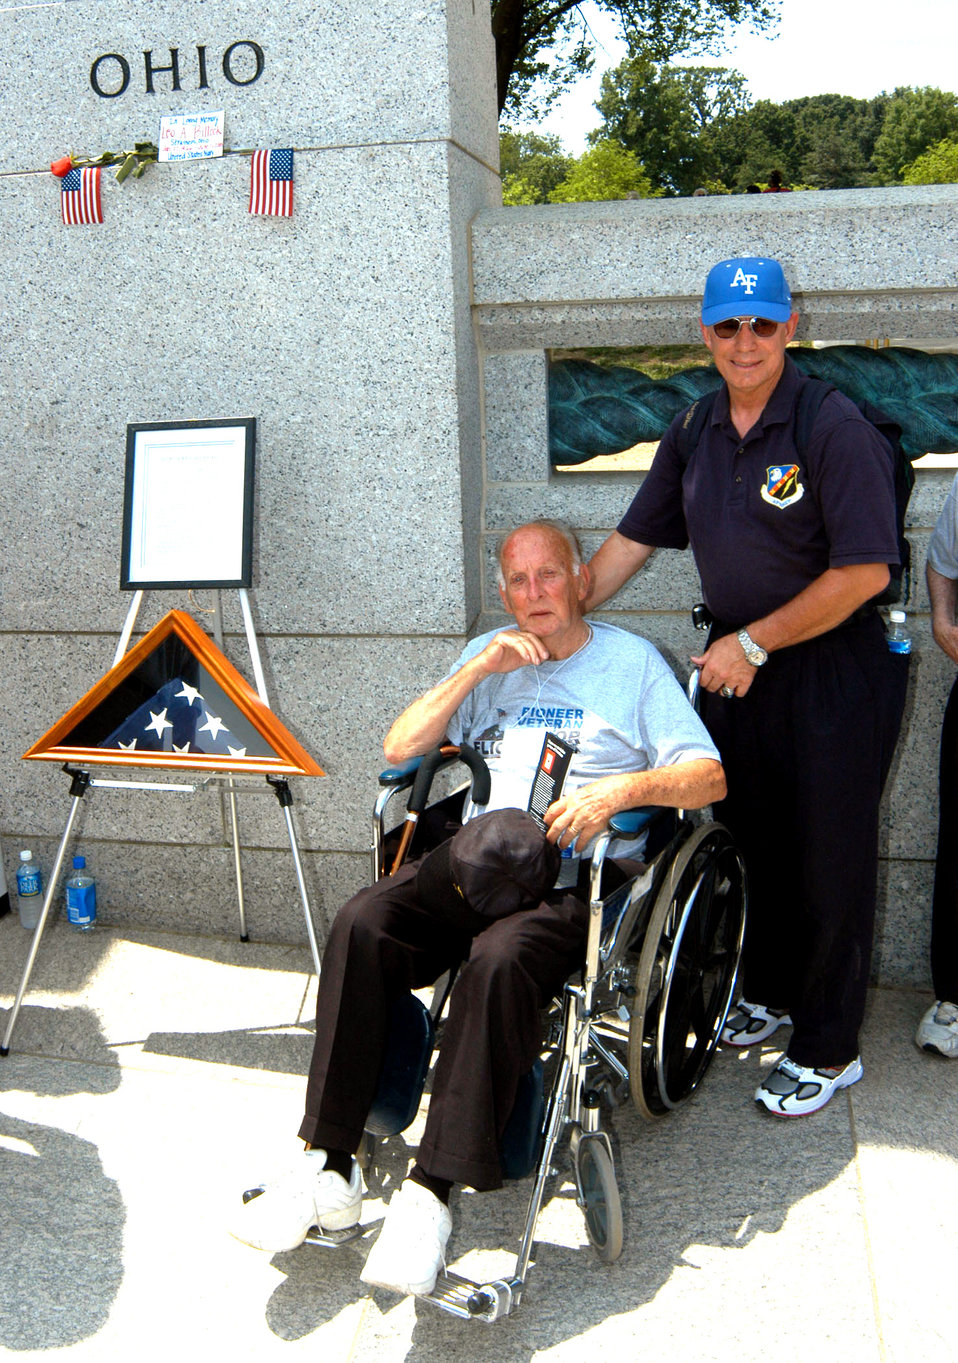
Volunteers fly 'greatest generation' to see their memorial

WASHINGTON -- Retired Col. Bob Manning (right) volunteered to help take care of World War II veterans when they visited the National World War II Memorial in Washington on June 11. The Air Force Academy graduate pushed Elwood Lannon, 84, around the memorial in a wheelchair during the visit. The American flag on the stand to the left was flown over the national cemetery in Dayton, Ohio, and represents the 400,000 servicemen and women who died during World War II and will never view their memorial.